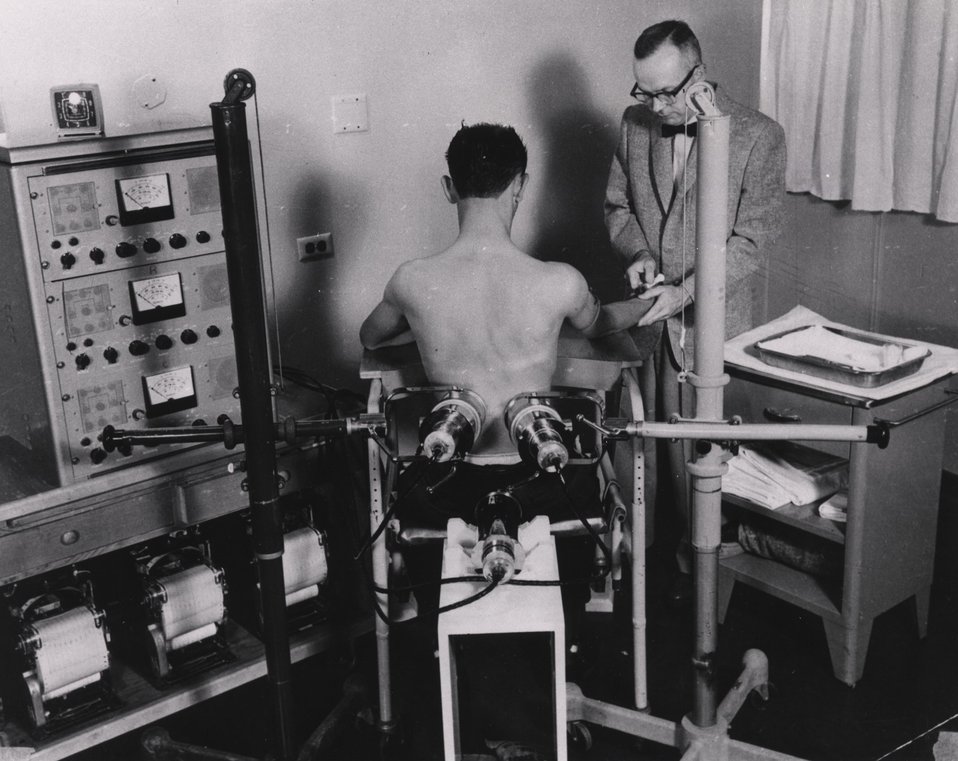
A patient seated in a specially designed chair with the three scintillation detectors in proper position for obtaining the iodine-131-labeled HIPPURAN renocystogram. c. 1964